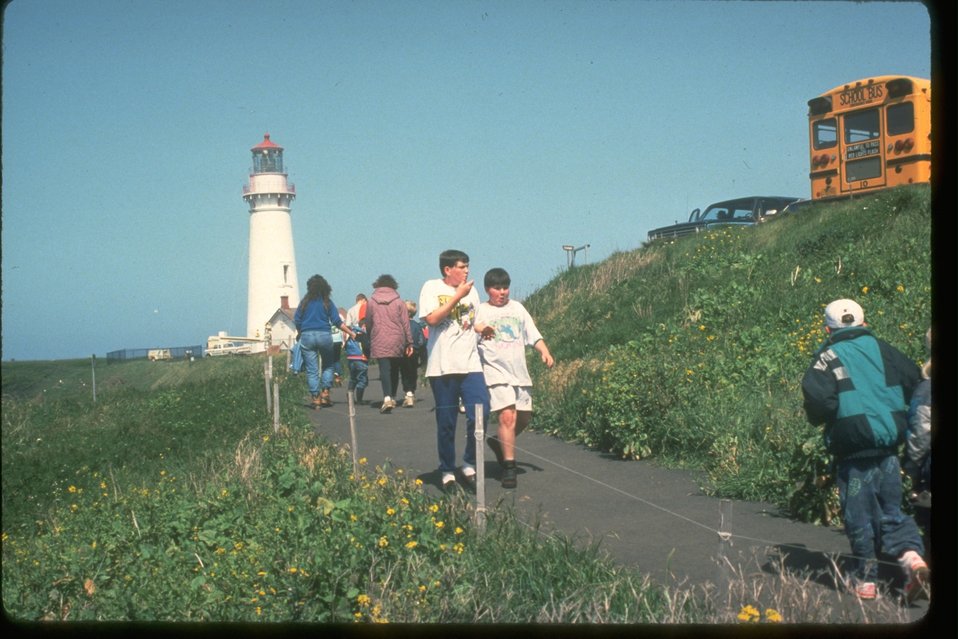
School groups visiting Yaquina Head.